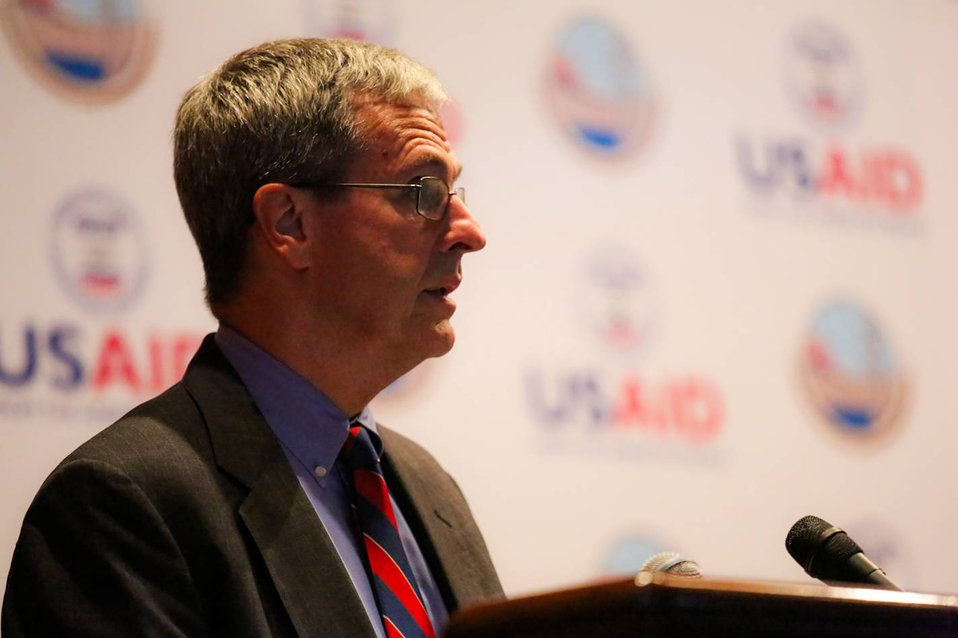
Islamabad, September 12, 2012 - Project Launch Ceremony of Waran Canal Irrigation System